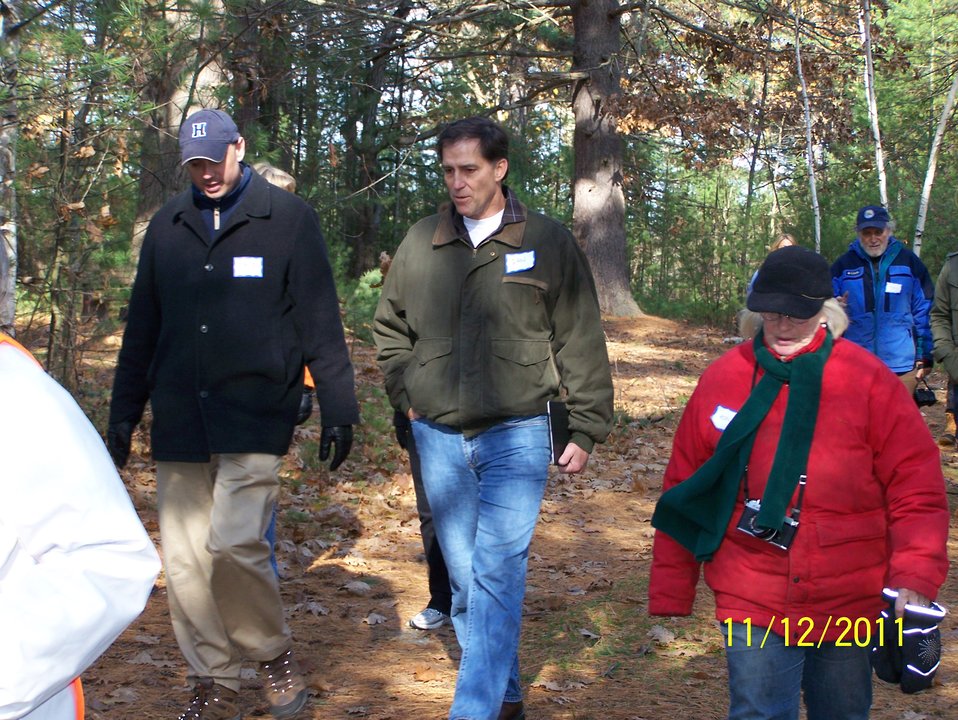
Dan Ashe with State Senator Eldridge and Friends of Oxbow President Rona Balco at Oxbow NWR